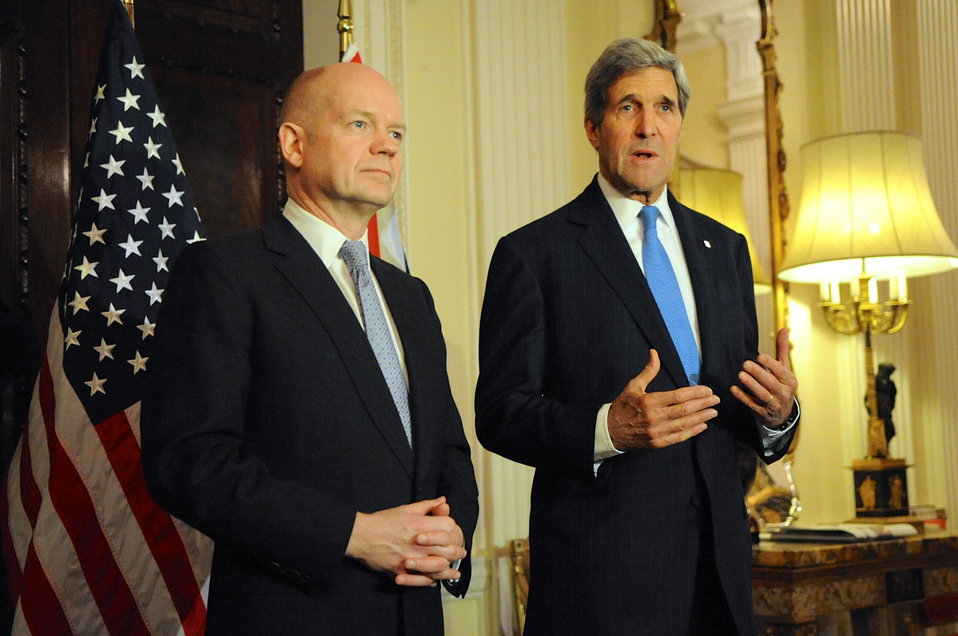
Secretary Kerry and Foreign Secretary Hague Speak to Reporters in London

U.S. Secretary of State John Kerry and U.K. Foreign Secretary William Hague speak to reporters following their bilateral meeting in London, United Kingdom, November 24, 2013.